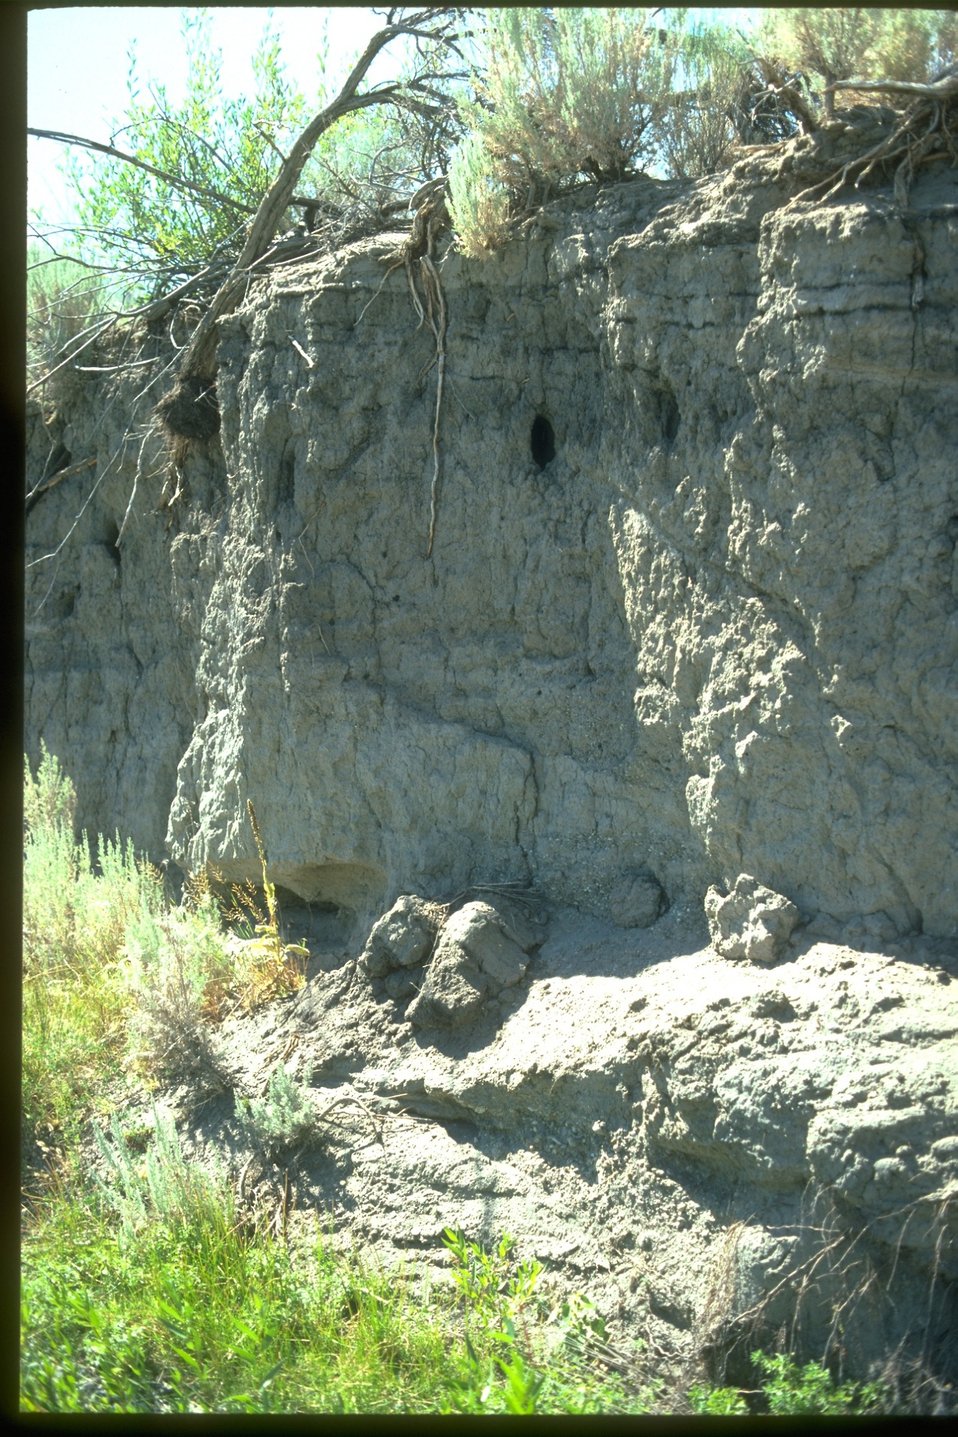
Soil profile in entrenched stream channel.